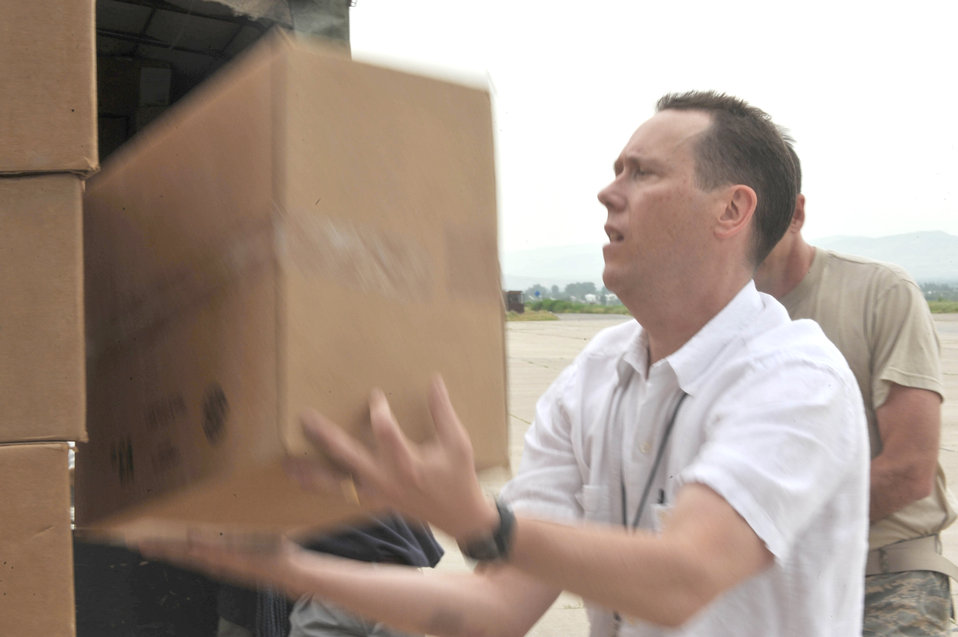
Tajik relief efforts

Kevin Allen helps load boxes of water, hygiene kits and medical supplies May 21, 2010, at Dushanbe International Airport, Tajikistan. The humanitarian cargo is for displaced Tajiks after floods and mudslides ravaged the Kulyab District earlier this month. Mr. Allen is the general services officer for the U.S. Embassy in Dushanbe.